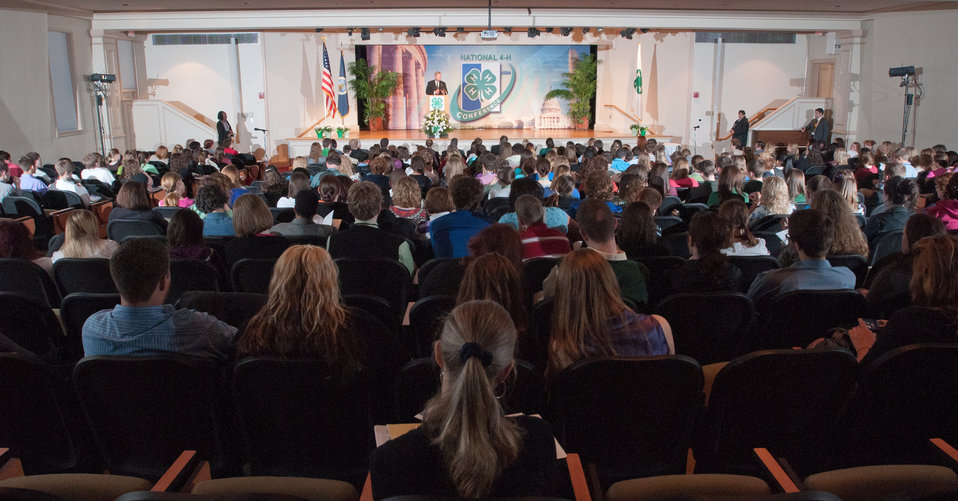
U.S. Department of Agriculture (USDA) Secretary Tom Vilsack (at podium) and Department of Education Secretary Arne Duncan spoke with approximately 300 youth from 47 states or territories and Canada at the National 4-H Conference on Tuesday, April 5, 2011 in Washington, DC. The conference is the premier youth development opportunity of the USDA. Aged between 15-19 years old the attendees were selected by various means by their states to be delegates to the conference. The Secretaries then took questions from the audience. Secretary Vilsack received questions on topics such as land grants, what is an average day for him, and both talked of their goals to have 1,000 new farmers and 1,000 new educators.